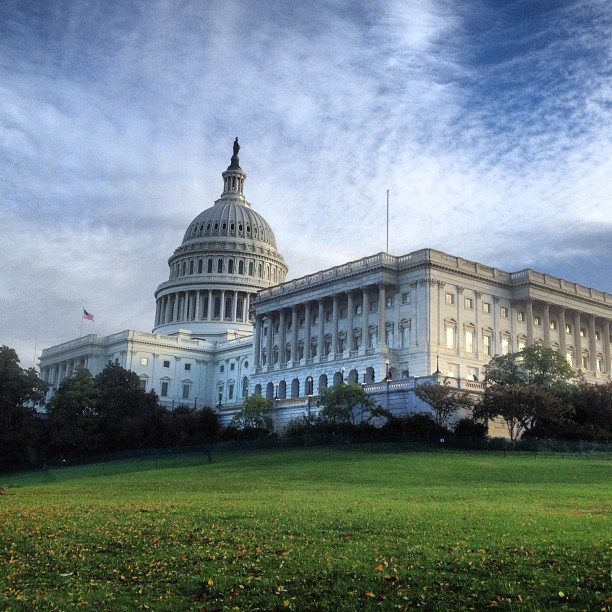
Capitol Hill weathered #sandy, resumed normal operations today.